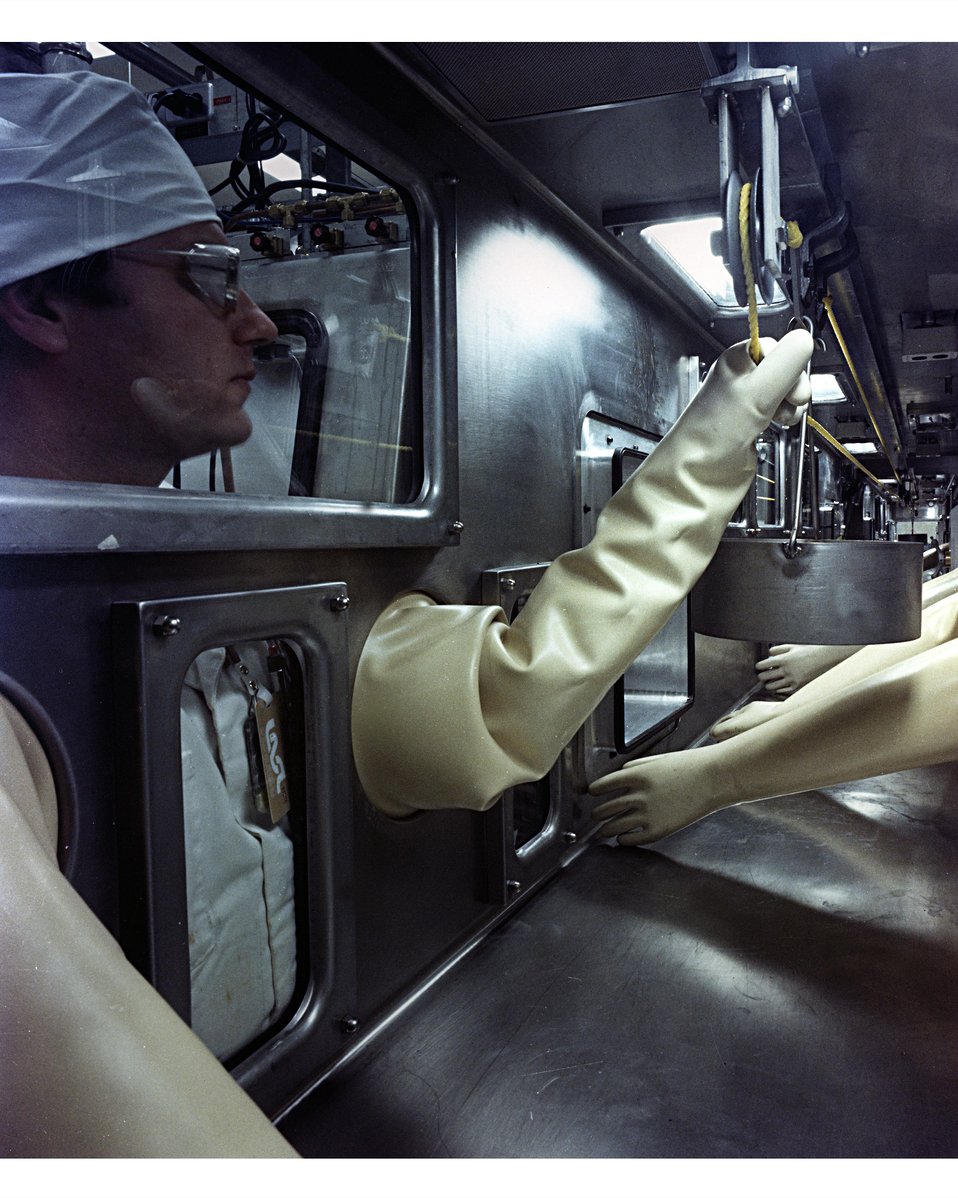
VIEW INSIDE CONVEYOR ALLEY WHERE CONTAINED HANDLING TAKES PLACE.

THE GLOVEBOXES ARE DESIGNED FOR PREPARING URANIUM AND PLU- TONIUM CARBIDE COMPOUNDS. THE PLUTONIUM FACILITIES AT THE TA-55 AT LANL ARE USED FOR WORK ON THE TWO MAJOR ISOTOPES, PU-239 AND PU-238, OF THE MAN-MADE ELEMENT PLUTONIUM. TA-55PROGRAMS HAVE ENCOMPASSED MANY PHASES OF PLUTONIUM RESEARCH AND DEVELOPMENT. OPERATIONS BEGAN IN APRIL, 1978.